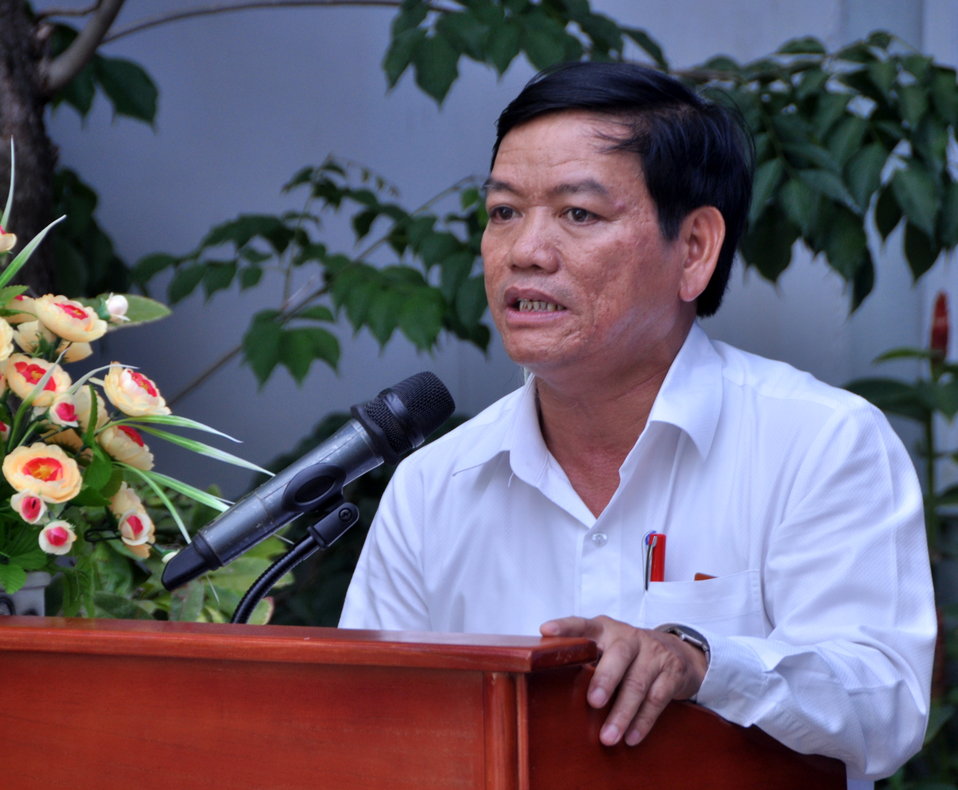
USAID Project Supports Rehabilitation Department for Children and Wheelchair Distribution in Danang

Danang, July 16, 2013